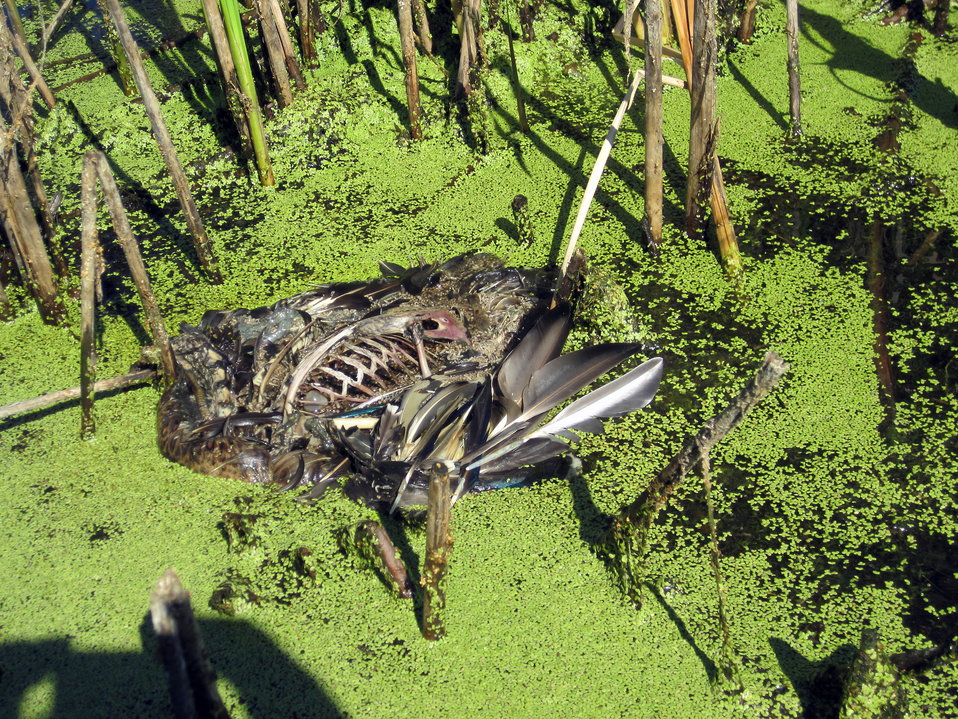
Avian Botulism Carcass

A carcass typical of those observed during avian botulism outbreaks. The Wildlife Health Office is conducting a study to assess the effectiveness of current management strategies in reducing mortality during botulism outbreaks.